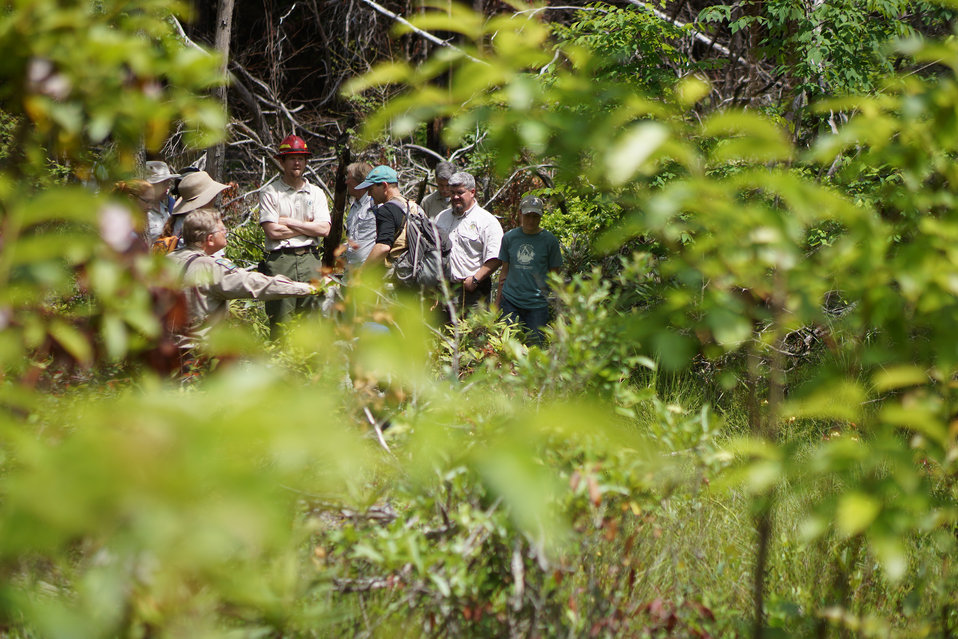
Mike Brod addresses the group

In May, bog conservationists from Tennessee, North Carolina, and Georgia convened in the north Georgia mountains for the spring, 2014 meeting of the Bog Learning Network. The event provided an opportunity for biologists to see, first hand, the result of management efforts at two north Georgia bogs. More importantly, the outings provided an opportunity to share innovative approaches to bog management, such as the role of the Georgia Plant Conservation Alliance in conserving rare plants and coordinating a cadre of volunteers to work on bog management.

The Bog Learning Network was convened in the winter of 2013 as a way to bring together people working for bog conservation across the Southern Appalachians. Southern Appalachian bogs are one of North America’s rarest habitats and home to many rare plants and animals.